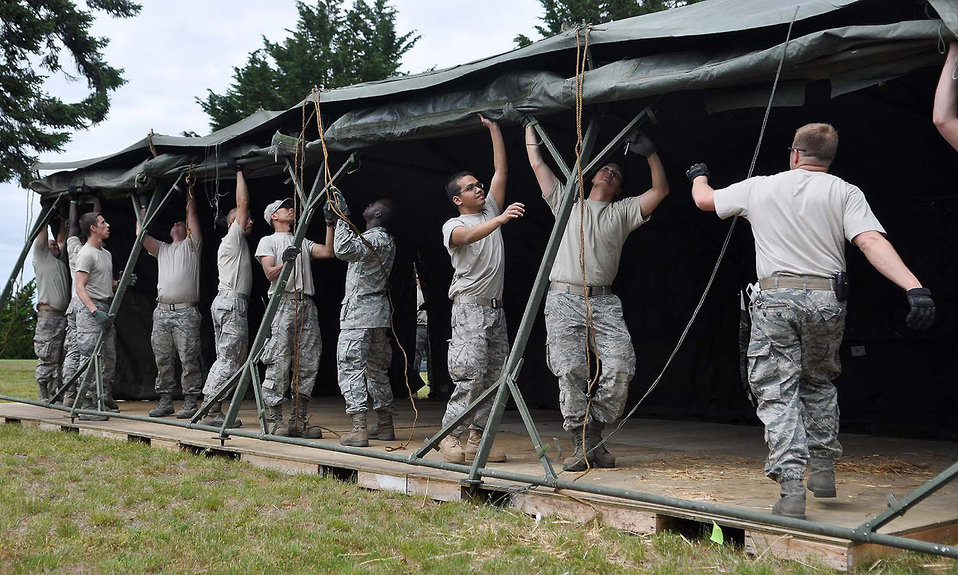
Air Mobility Command Rodeo

Airmen set up tents June 21, 2011, at Joint Base Lewis-McChord, Wash.